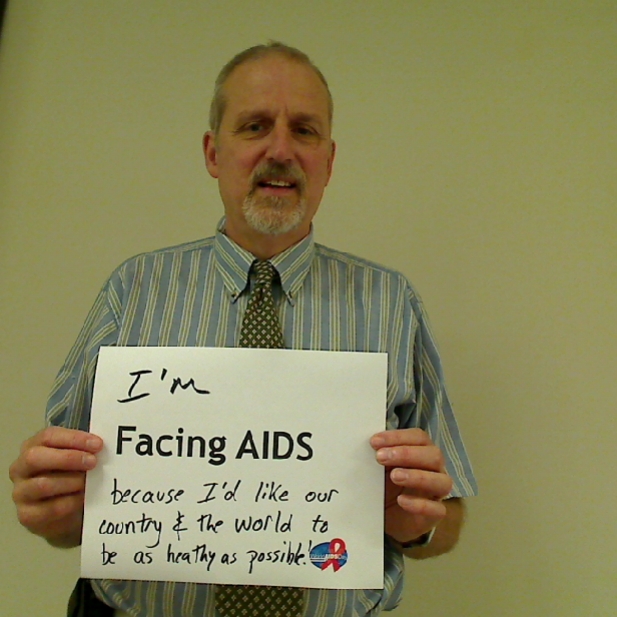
I'm Facing AIDS because I'd like our country and the world to be as healthy as possible!